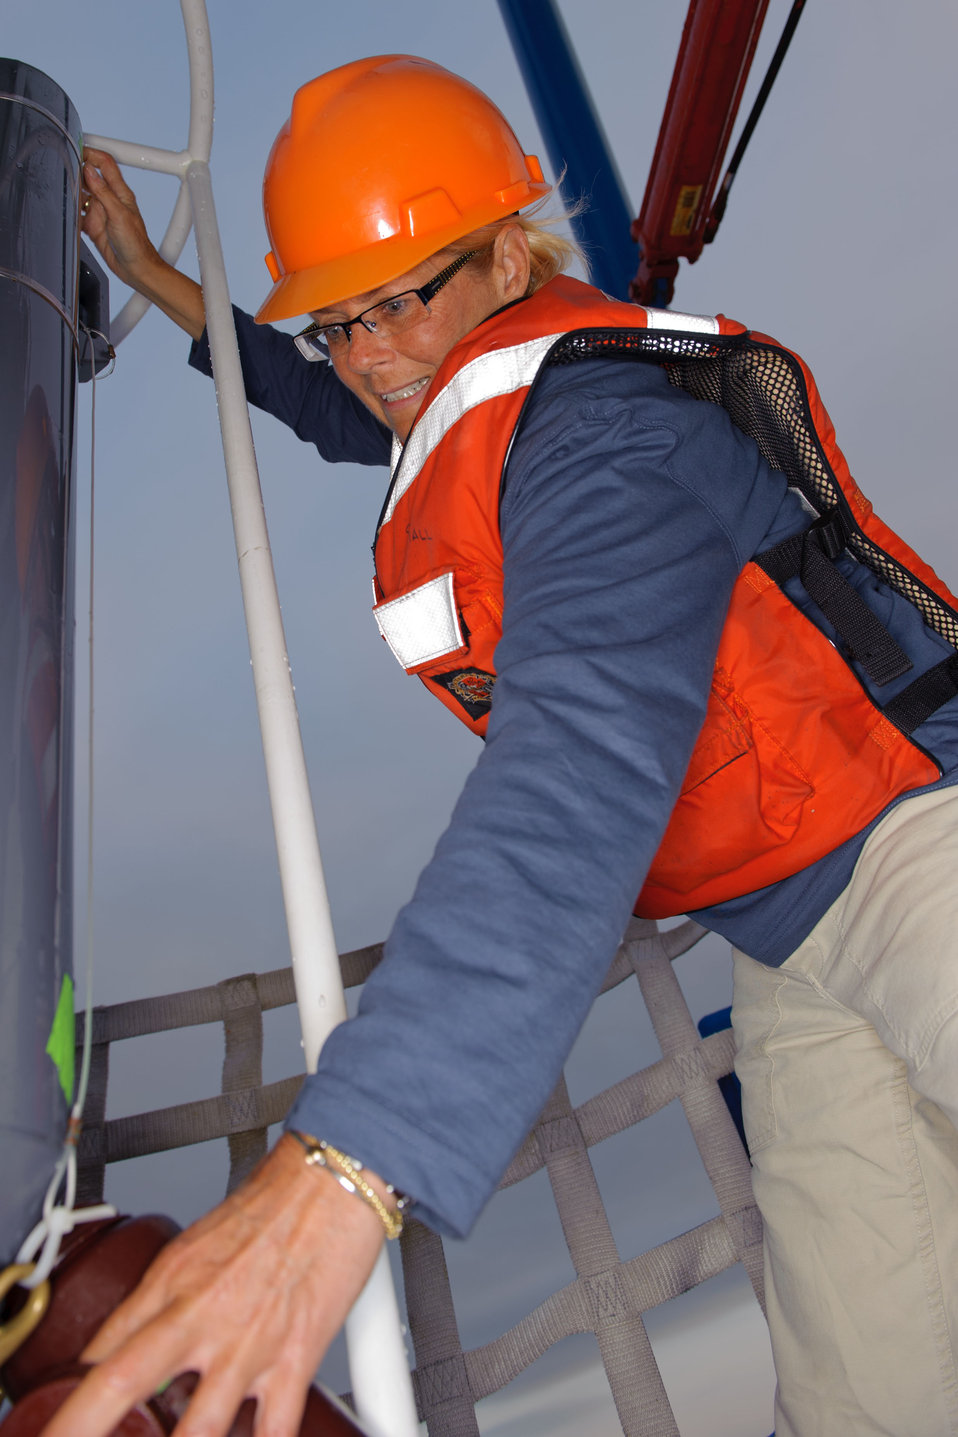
August 5, 2011 Carefully filling up the bottles to sample water captured from the bottom up